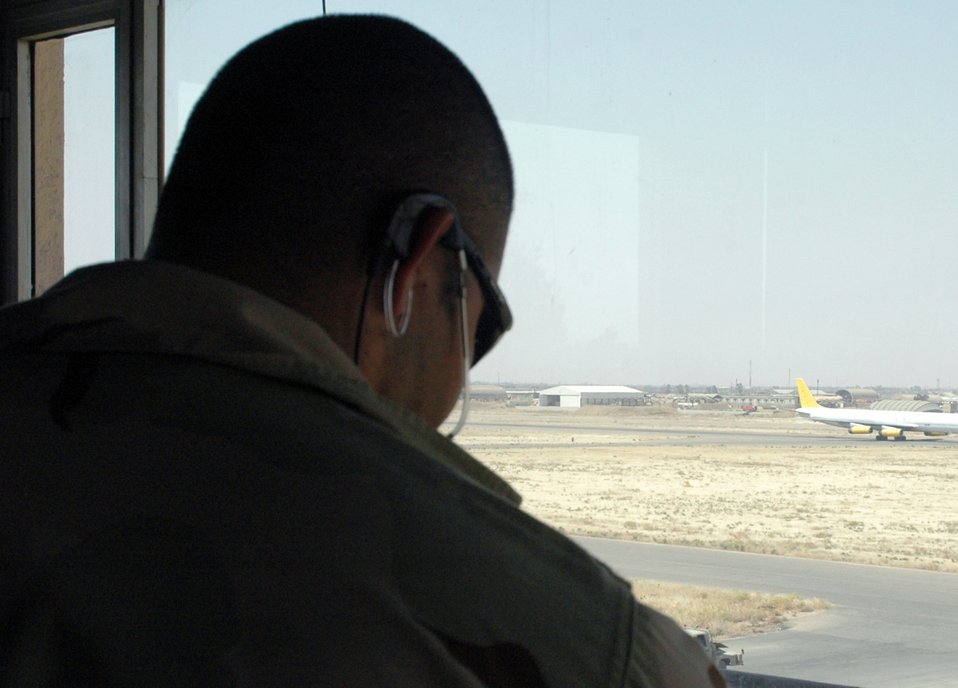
Kirkuk control tower keeps watch day, night

Senior Airman Adam Guerrero watches a cargo plane take off at Kirkuk Air Base, Iraq, on Monday, June 26. He is an air traffic control technician with the 506th Expeditionary Operations Support Squadron.